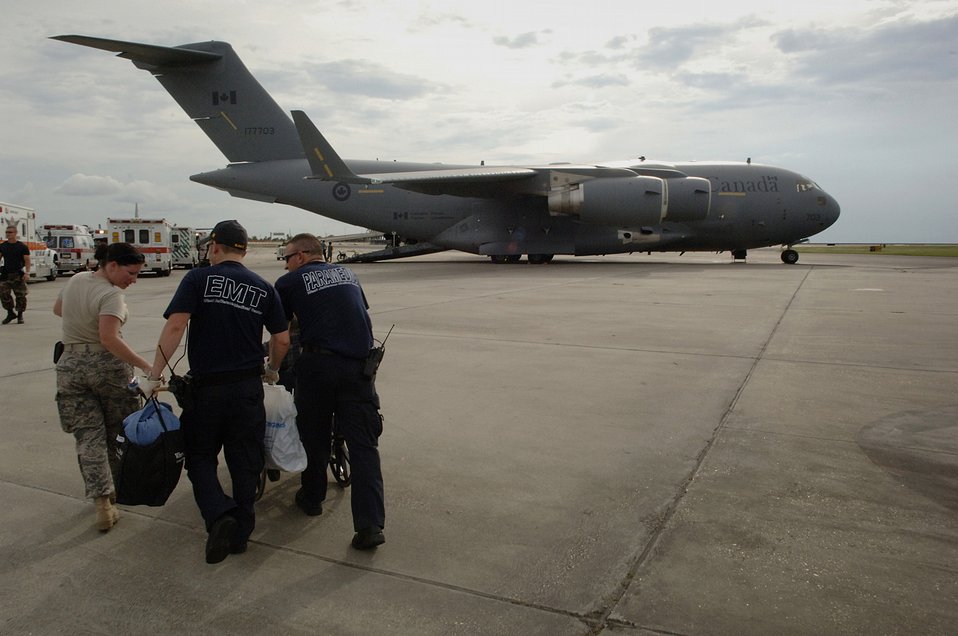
Canadian forces assist in hurricane evacuation

Emergency vehicles carrying evacuees of Hurricane Gustav stage near a Canadian air force CC-177 Aug. 31 at Lake Front Airport in New Orleans. The Federal Emergency Management Agency and the Department of Defense provided flights to transport citizens to destinations safely outside the hurricane's path.